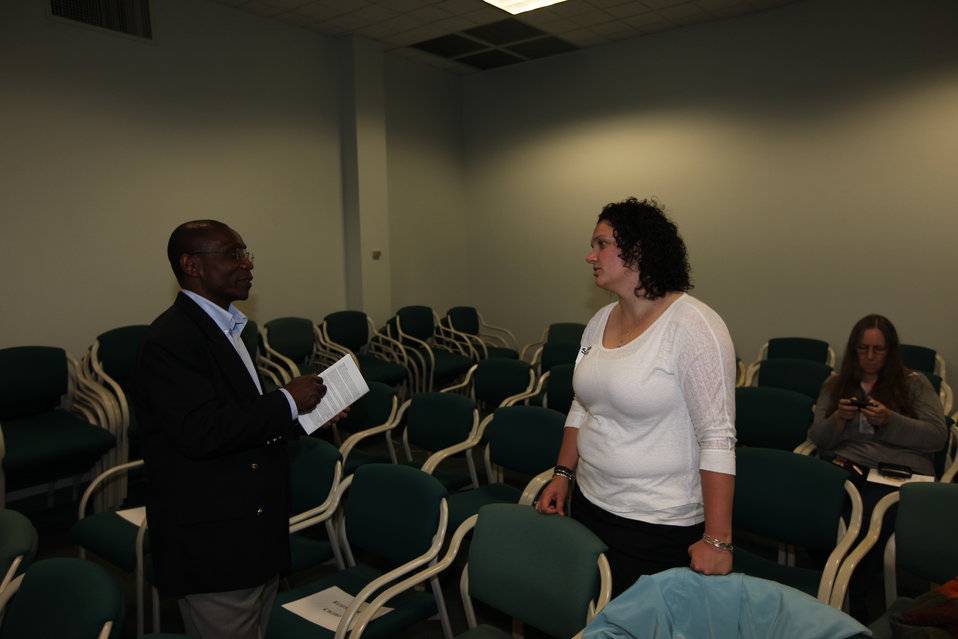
Northeast Region Employee Appreciation Awards